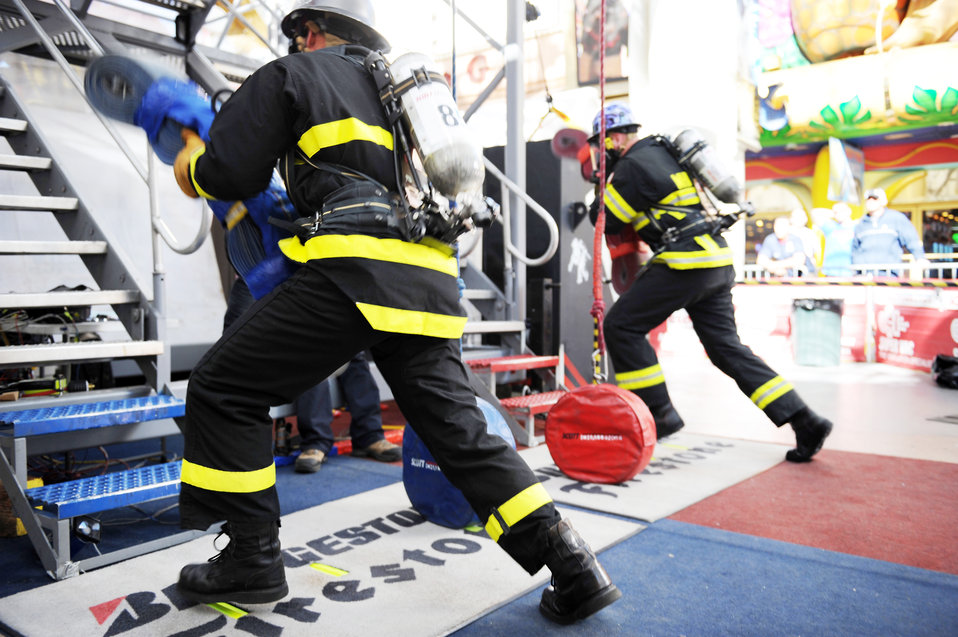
Airmen compete in 2009 Scott Firefighter Combat Challenge

Firefighters from all around the world compete in an individual firefighter event Nov. 17, 2009, at the 2009 Scott Firefighter Combat Challenge in Las Vegas.